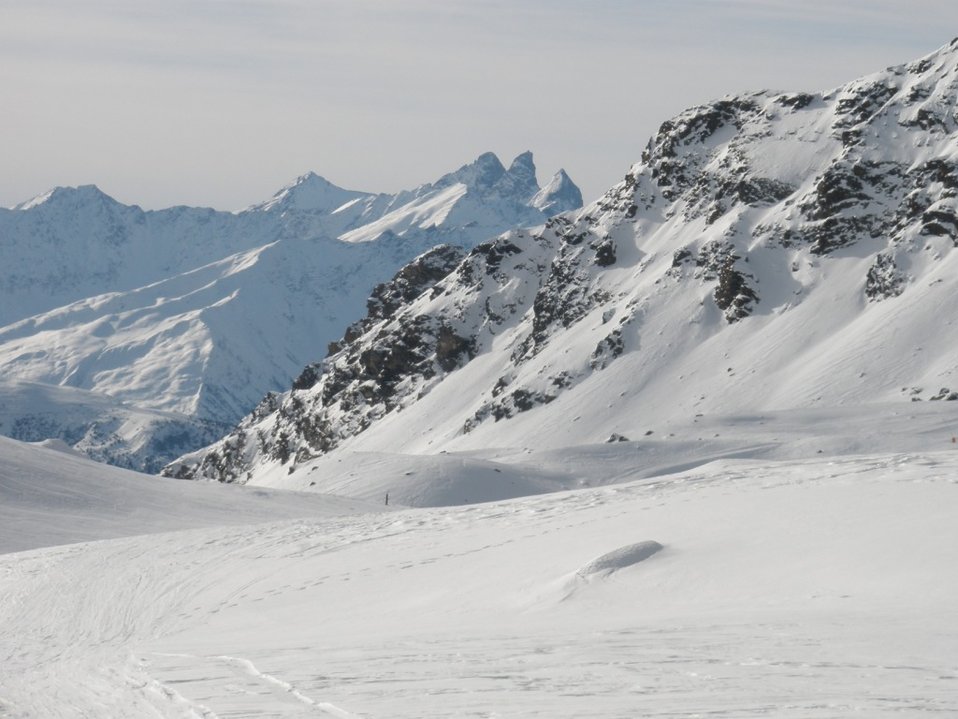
עברית: מסלולים מושלגים באתר הסקי ואל טורנס